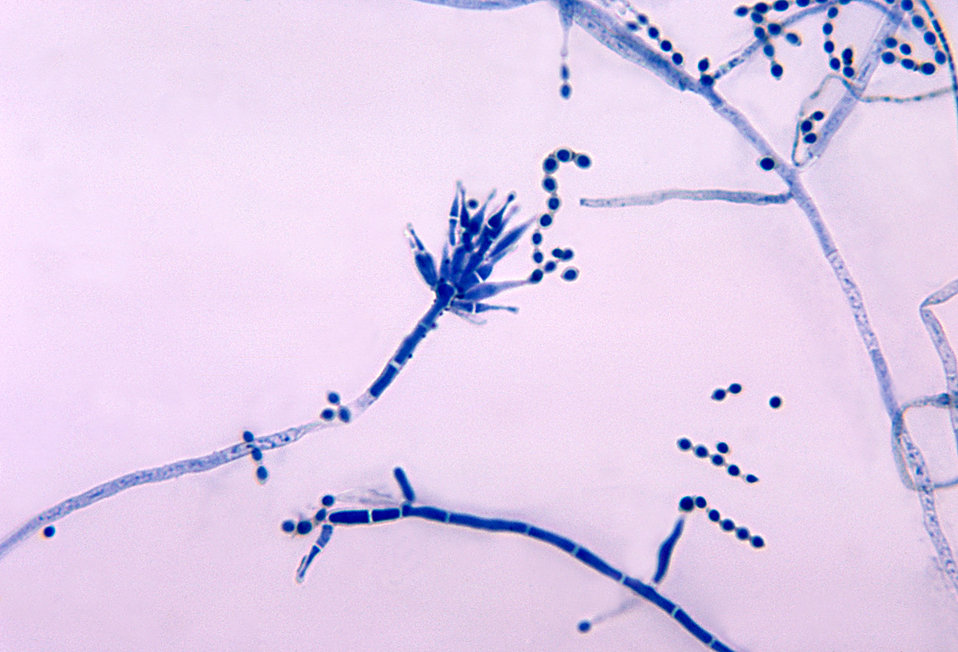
This photomicrograph depicts a conida-laden conidiophore of a Penicillium marneffei fungal organism.